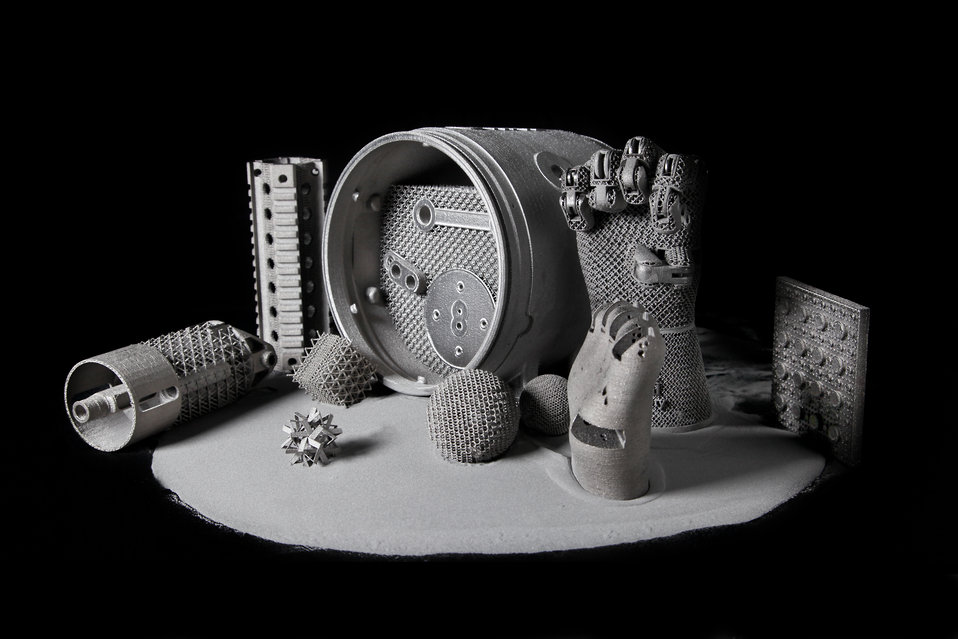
At Oak Ridge National Laboratory, electron-beam additive manufacturing produced this fully functional lightweight robotic hand and other parts pictured here, which made from titanium powder.